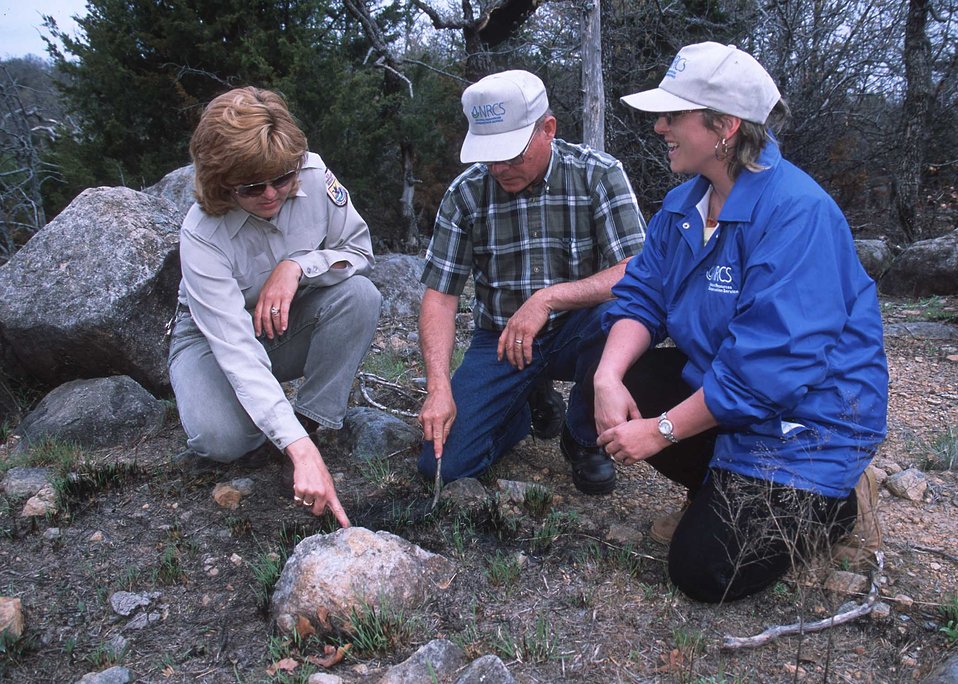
NRCS cooperatively working with the USF&WS on a prescribed burn at the Witchita National Wildlife Refuge. Oklahoma.